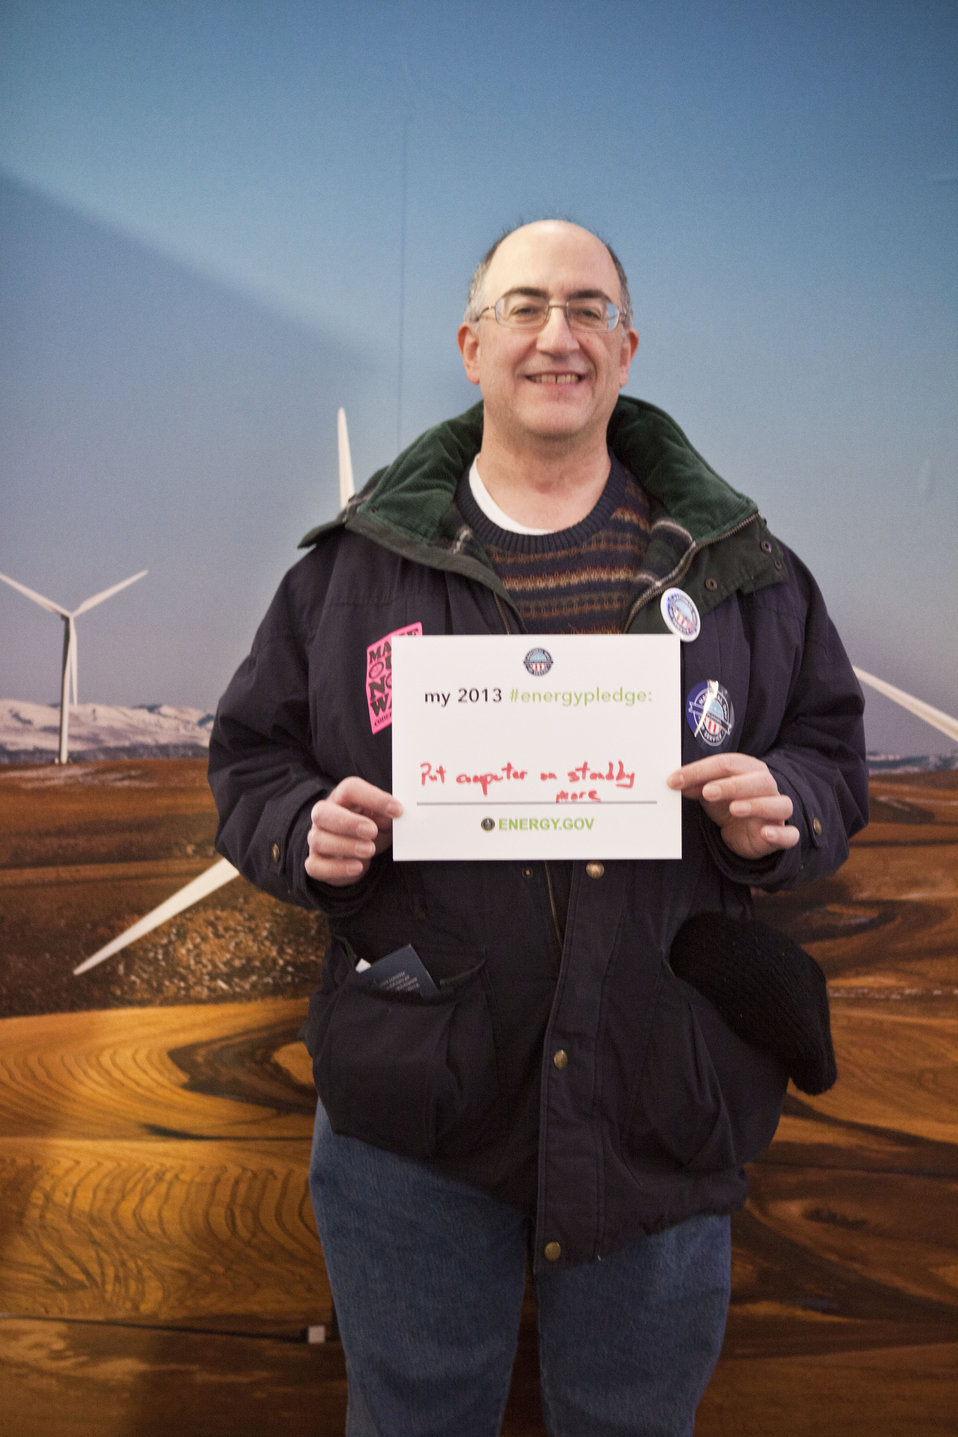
What's your #energypledge?